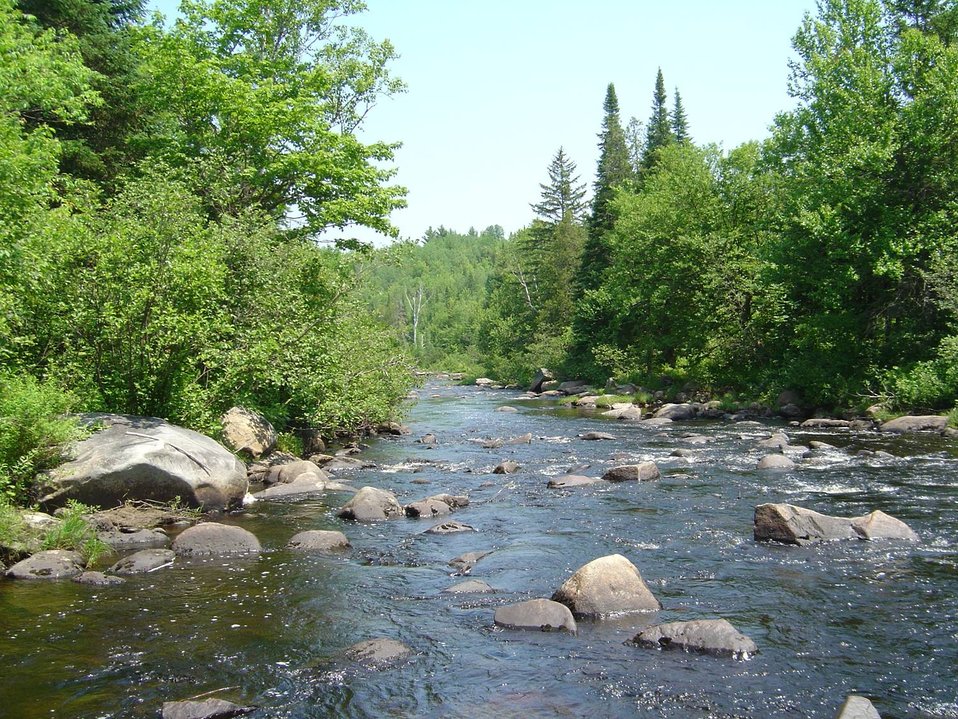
North Branch

Nulhegan Basin Division, Silvio O. Conte National Wildlife Refuge.